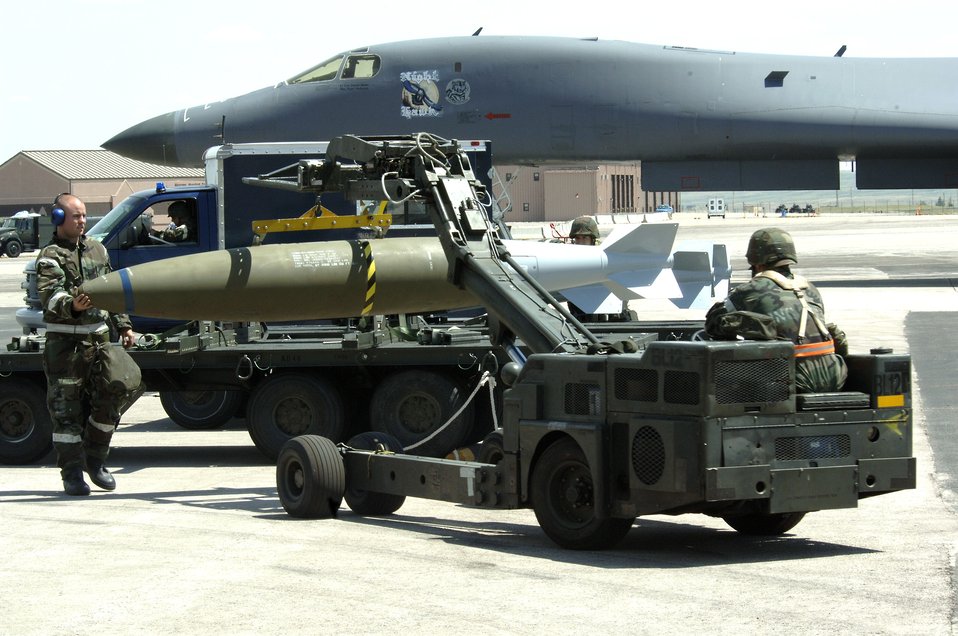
Badlands Express

Senior Airman Ryan McGlocklin (left) and Airman 1st Class Eric Mansfield prepare to load a training bomb into the bay of a B-1 Lancer at Ellsworth Air Force Base, S.D., on Monday, June 26. The base is conducting Exercise Badlands Express 06-04 to prepare for an operational readiness inspection in July. The Airmen are assigned to the 28th Aircraft Maintenance Squadron.